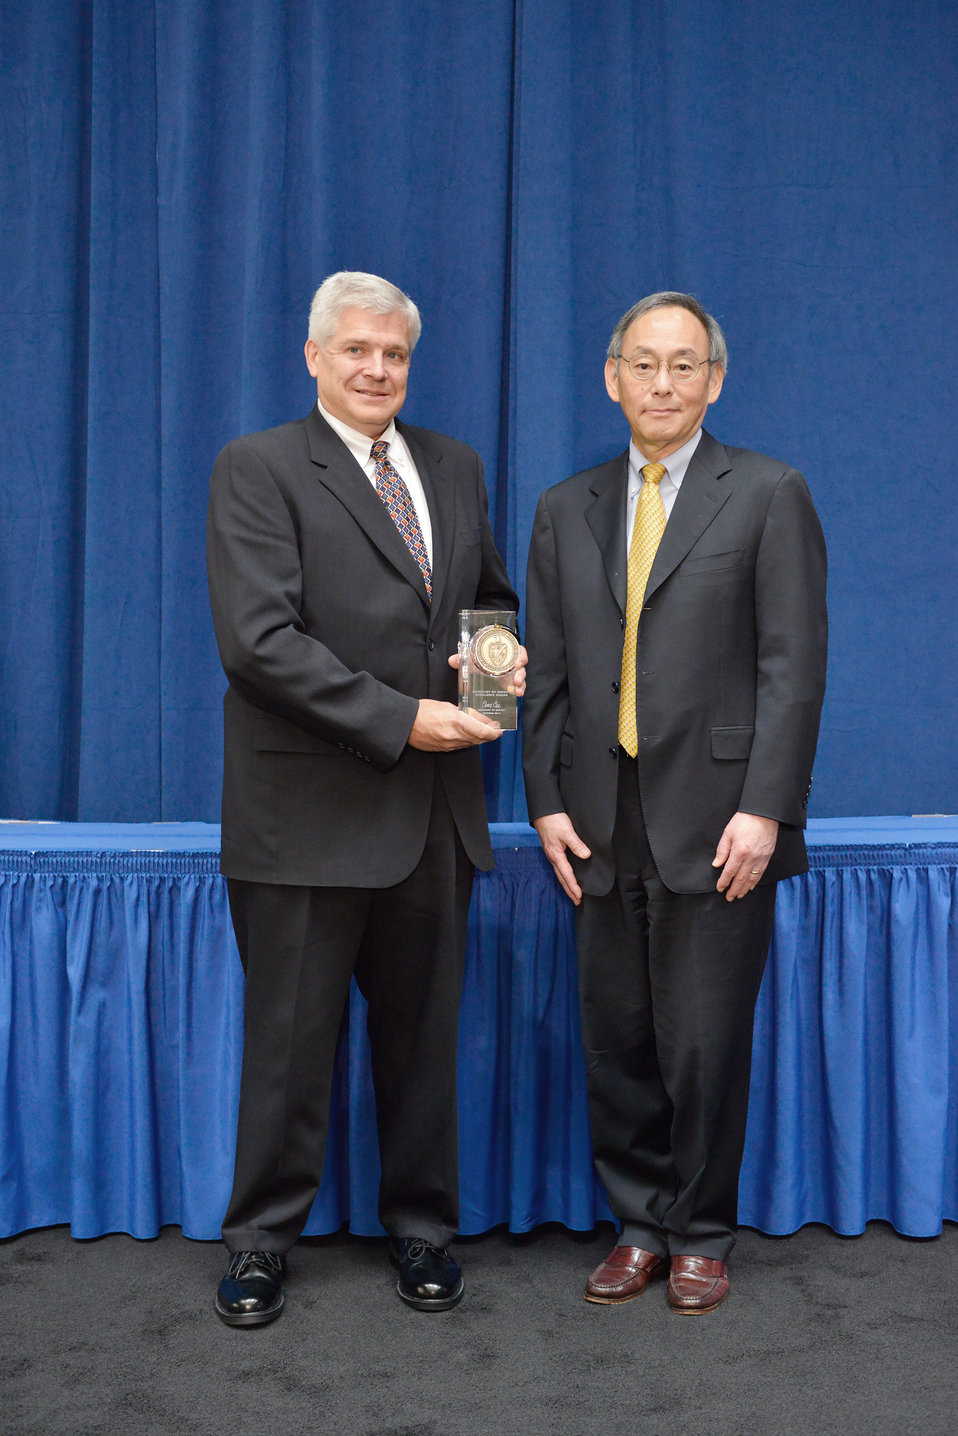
Excellence Award Thomas K. Teynor

Thomas K. Teynor, Lead General Engineer, Richland Operations Office, is the recipient of a Secretarial Excellence Award. Mr. Teynor led the re-baselining of the troubled Sludge Treatment Project which had encountered many technical setbacks over the previous 10 years, and was on the Defense Nuclear Facility Safety Board Watch-List due to persistent project management and engineering issues. Mr. Teynor developed a coalition of technical experts from across the Department of Energy complex to reach consensus on disposal paths and criteria for waste fractions going to both the National Repository and the Waste Isolation Pilot Plant. Under his leadership the project developed technologies and processes to remove and stabilize the sludge in order to meet these varied acceptance criteria. He made a calculated and important decision for the project by paving the way for an operator training and technology development program. Mr. Teynor imposed a strong engineering, operations, project management, and safety discipline in the project to meet challenges while maintaining a strong safety record and meeting costs and schedule goals. Sludge Treatment Project is now a successful project with a strong project management, operations, engineering and safety culture; and Defense Nuclear Facilities Safety Board Watch List issues have been closed.